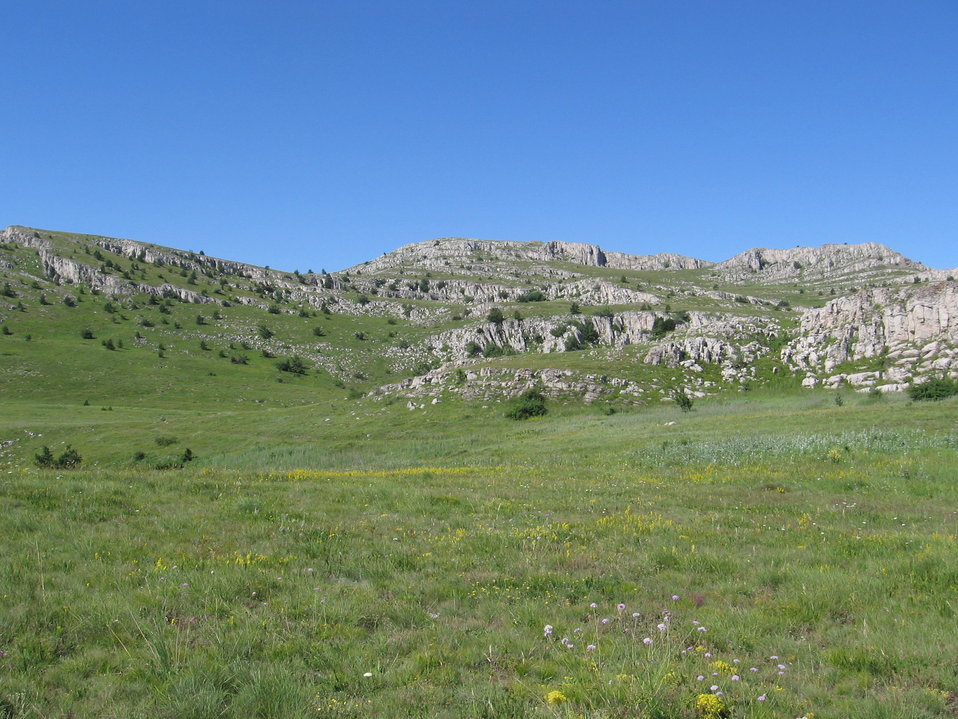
Українська: Бабуган: Фото